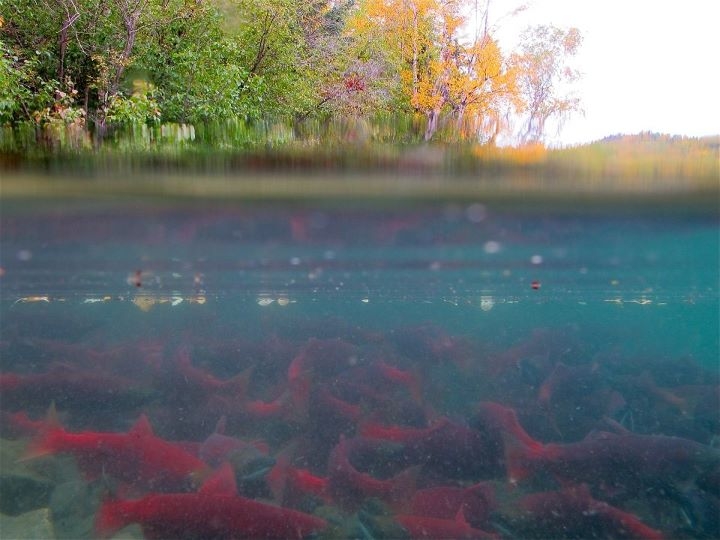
Sockeye salmon schooling in Hidden Lake

Sockeye salmon schooling near the boat ramp at Hidden Lake on the Kenai Peninsula.